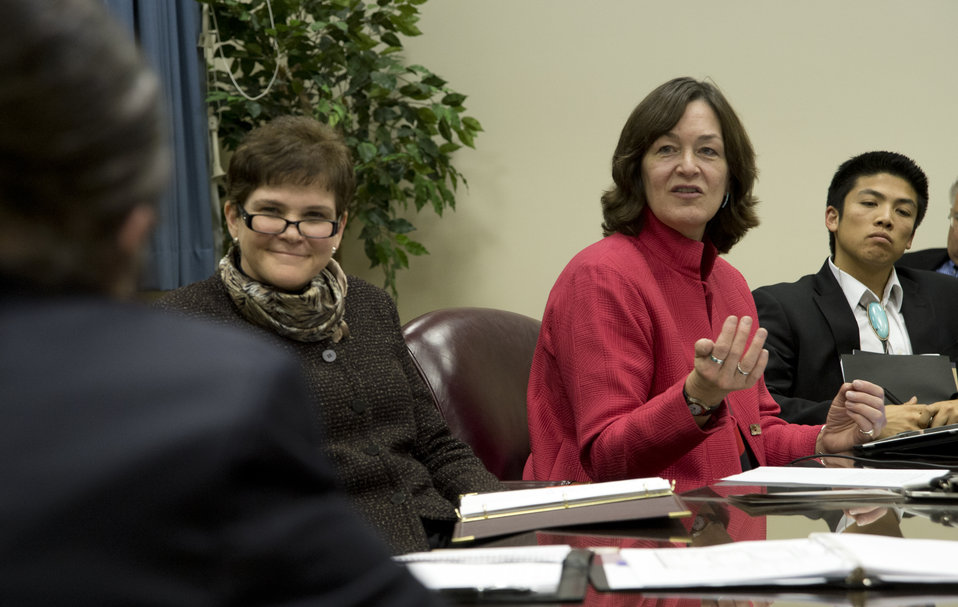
Agriculture Deputy Secretary Krysta Harden listens to U.S. Department of Agriculture (USDA) Office of Tribal Relations (OTR) Leslie Wheelock speak at a roundtable discussion on Agriculture, Community and Economic Development Opportunities in Indian Country with Agriculture with tribal leaders at USDA in Washington, D.C. on Tuesday, Nov. 12, 2013. Government Relations Advisor for Kilpatrick Townsend, D.C. PaaWee Rivera sits to the right of Ms. Wheeler.